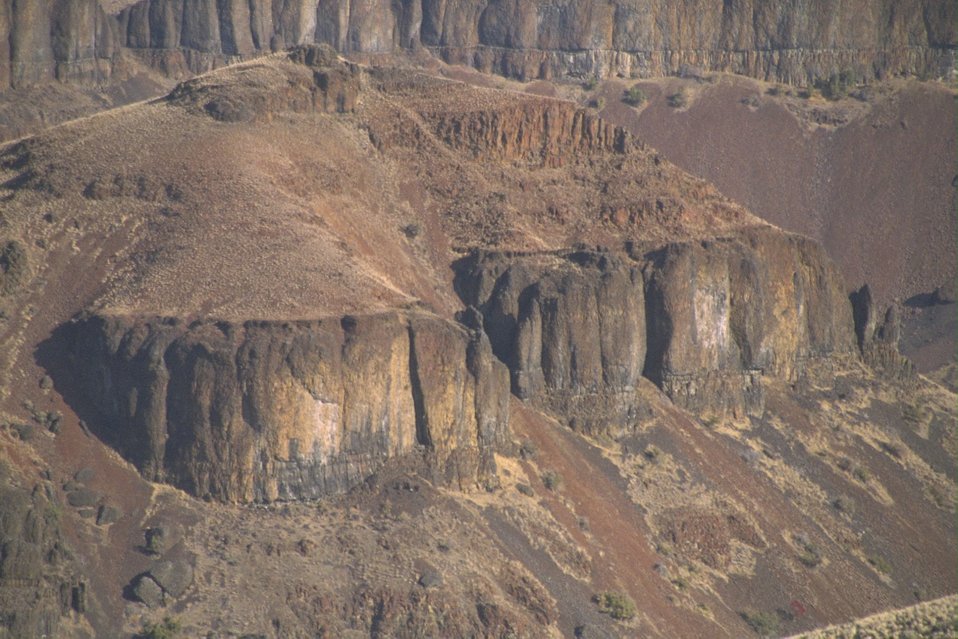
A long distance shot of the basalt cliffs along the John Day River.